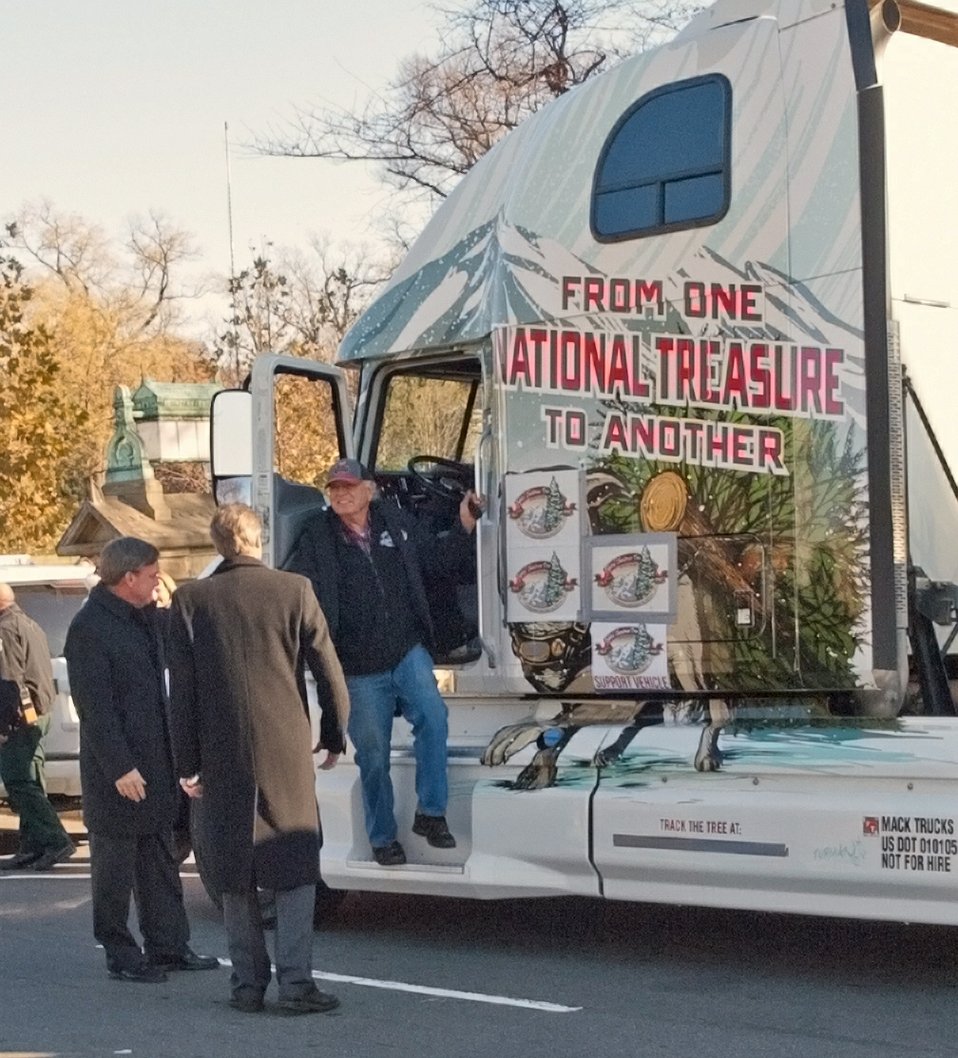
Former Colorado Senator Ben Nighthorse Campbell is greeted after driving the 2012 Capitol Christmas Tree to Washington, D.C. on Nov.26, 2012. The 73-foot Englemann spruce traveled from the White River National Forest in Colorado.